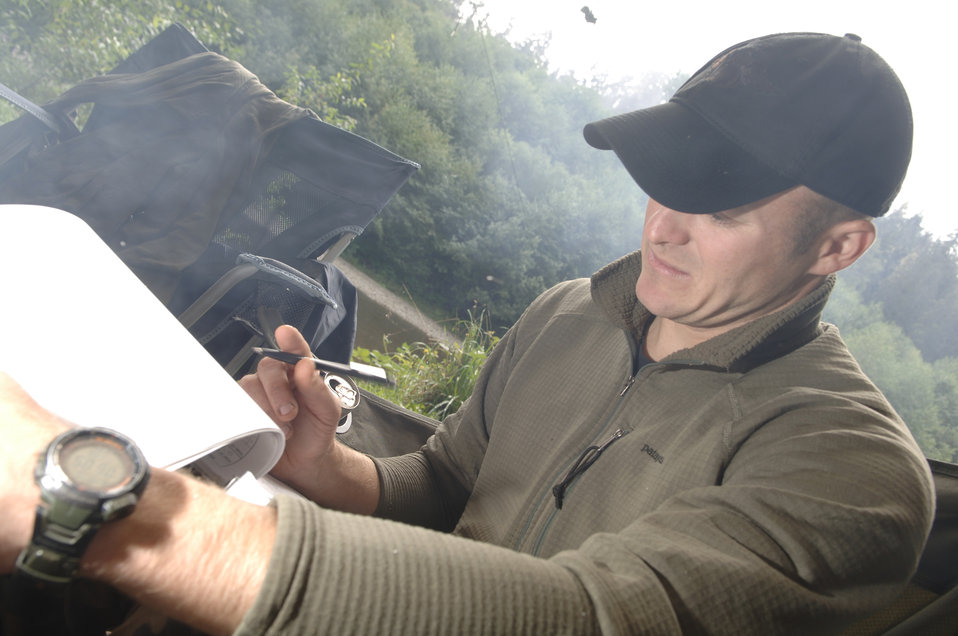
Students learn to survive in 'Tropics'

A Survival, Evasion, Resistance and Escape Course instructor from Fairchild Air Force Base, Wash., grades his students at the end of the